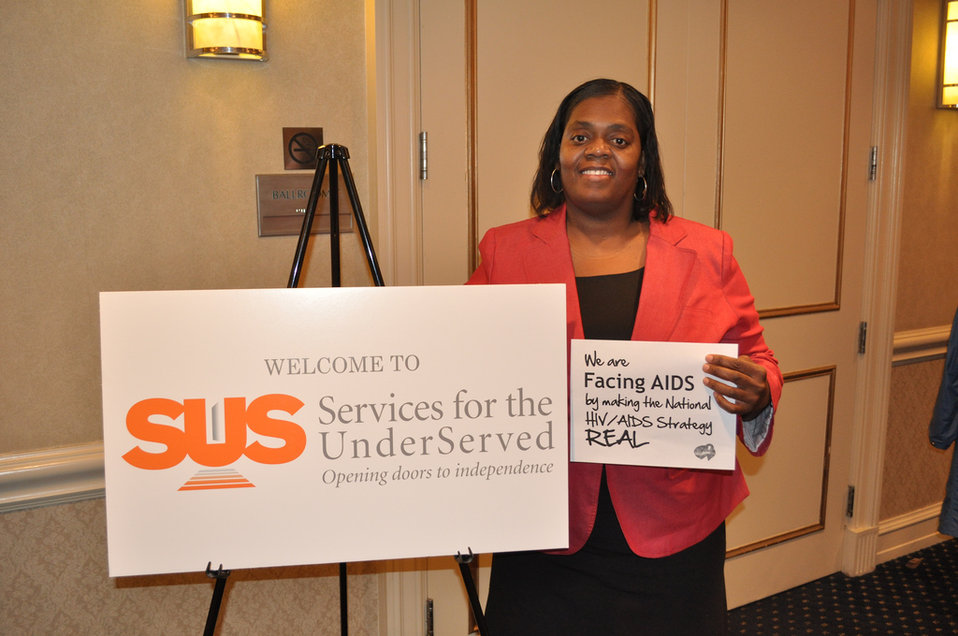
We are Facing AIDS through NHAS-12